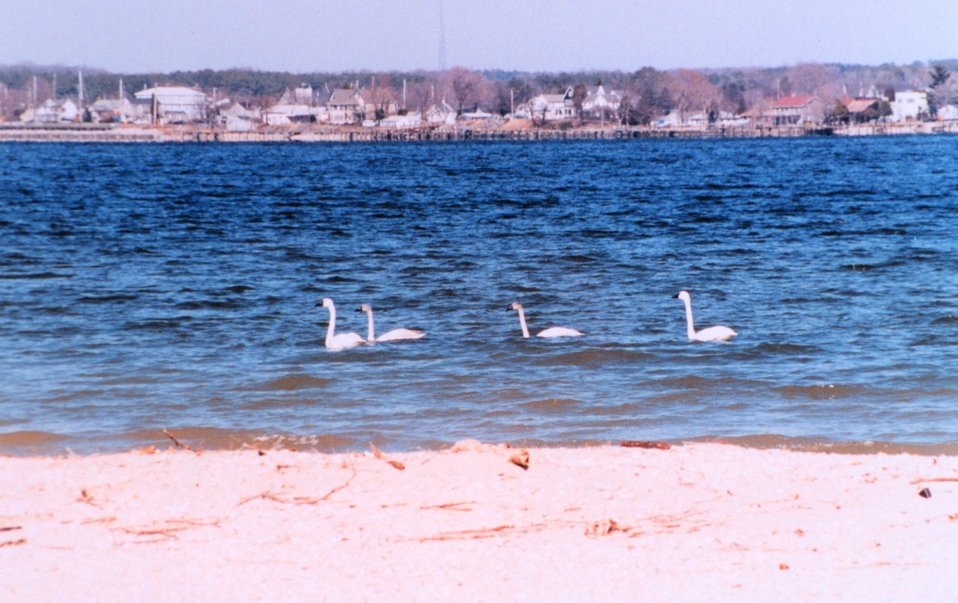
A tundra swan family cruising along the Patuxent River.